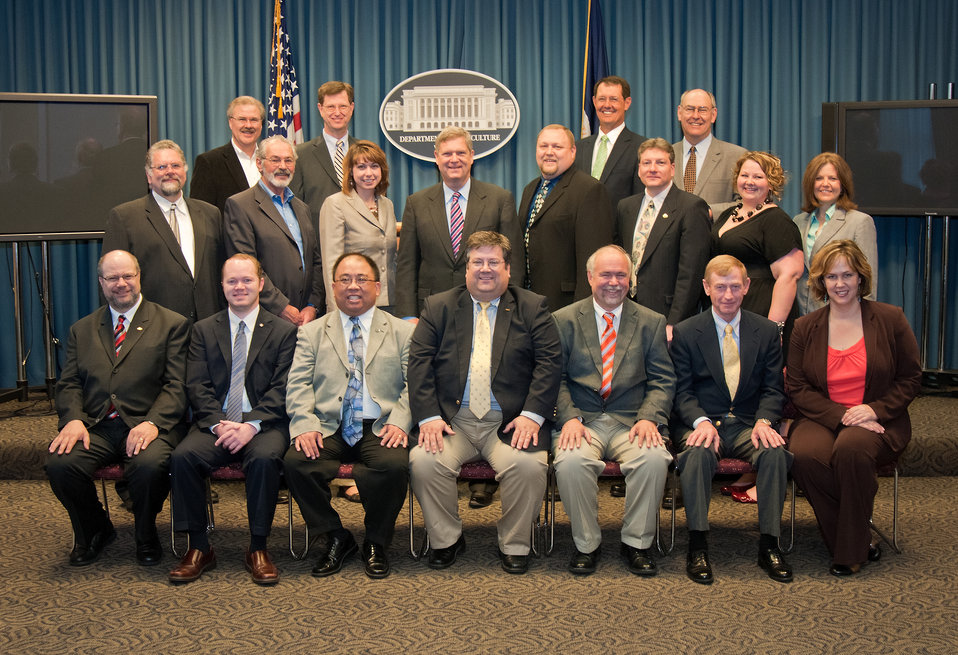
Agriculture Secretary Tom Vilsack with the National Association of Farm Broadcasters at the U.S. Department of Agriculture in Washington, DC, on Wednesday, March 30, 2011.